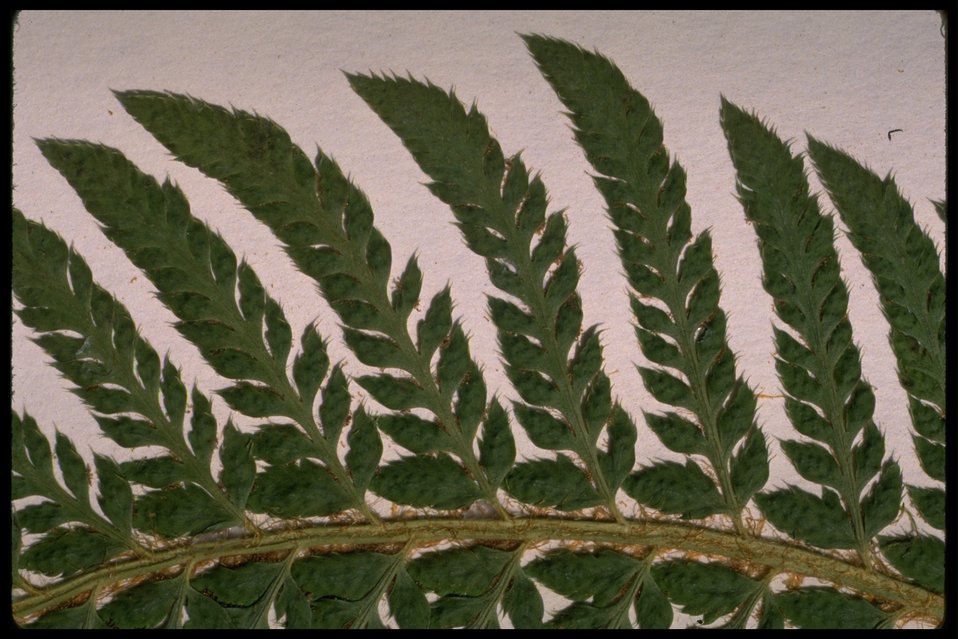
Closeup shot of California sword fern (Polystichum californicum).